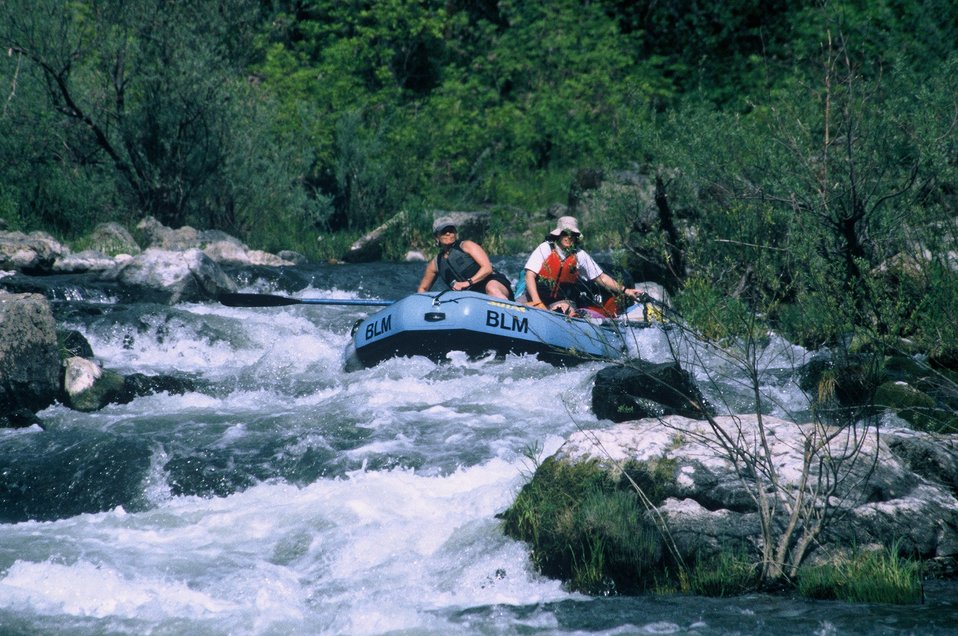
Rainie Falls Fish Ladder Wild section of the Rogue River from Grave Creek to Foster Bar. 3100 cfs at Grants Pass and 5300 at Agness.